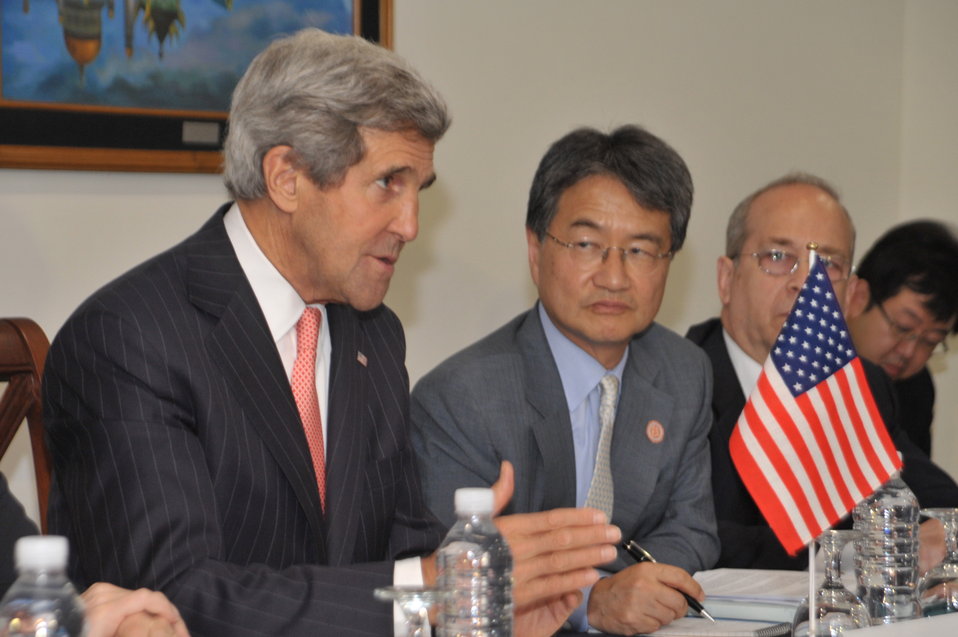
Secretary Kerry Addresses the ASEAN Trilateral Meeting

U.S. Secretary of State John Kerry, flanked by Acting Assistant Secretary for East Asian and Pacific Affairs Joseph Yun, speaks to officials from Japan and the Republic of Korea during a trilateral session during an ASEAN ministerial meeting in Brunei on July 1, 2013.